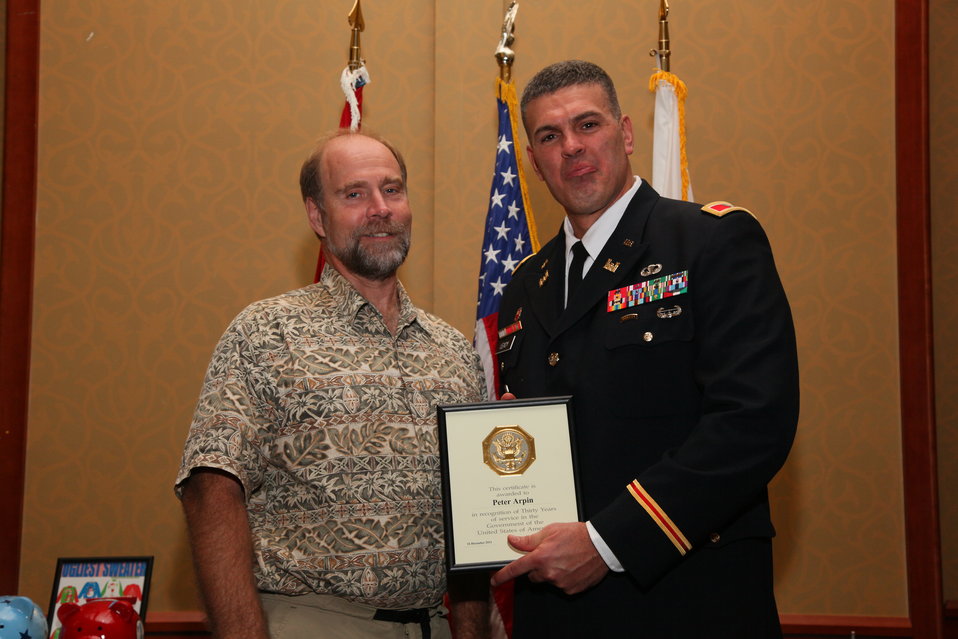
Sacramento District Holiday Party 2011